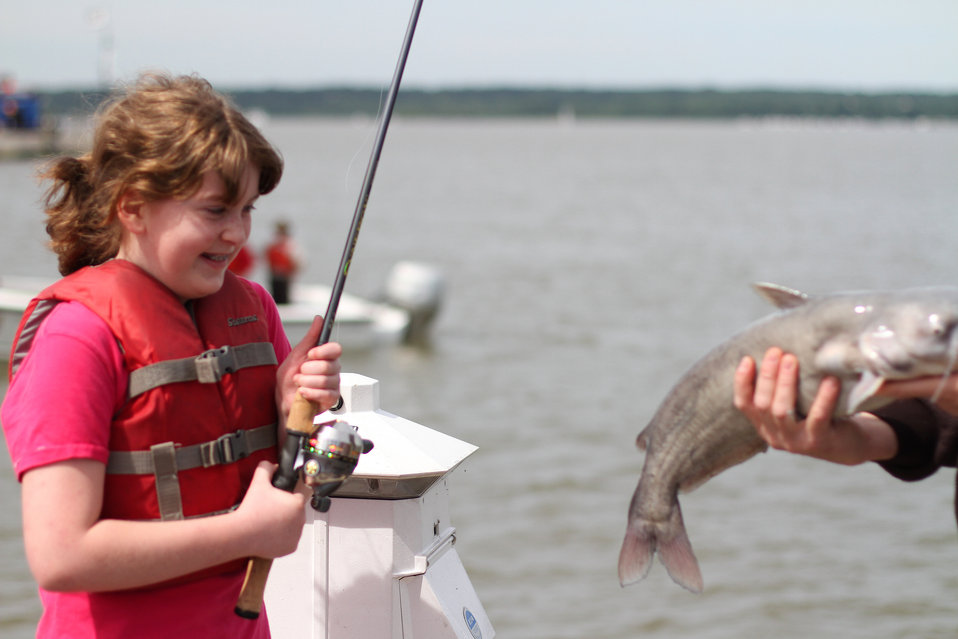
The first fish of the day from the pier!